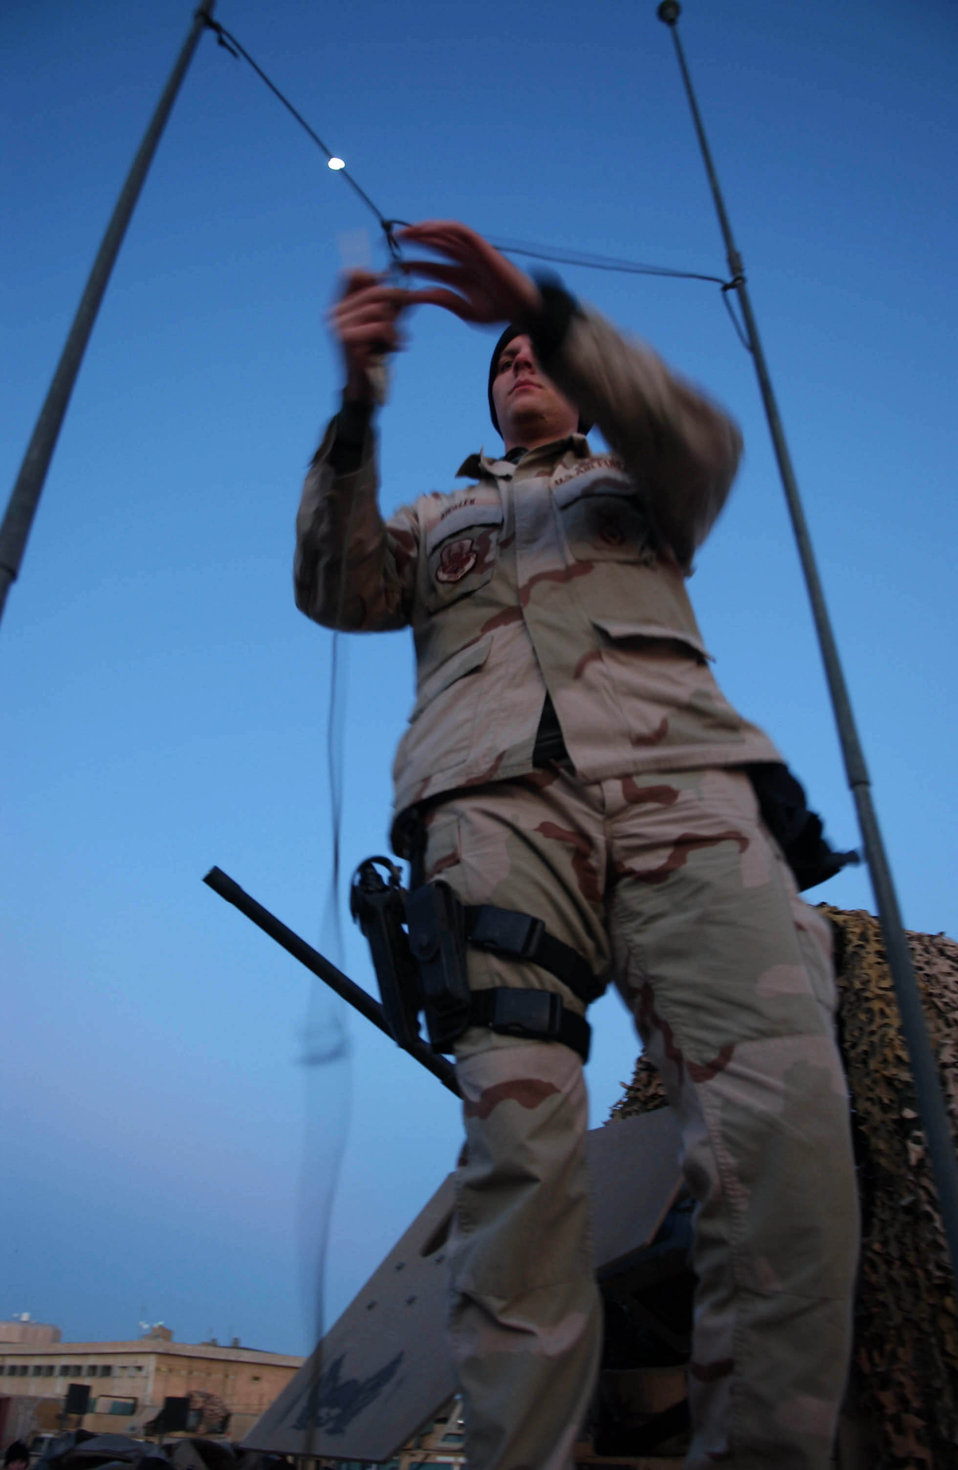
Patrolling Baghdad

An Airman from Bravo Flight, Detachment 7, 732nd Expeditionary Security Forces Squadron adjusts the antenna of a high mobility, multi-wheeled vehicle prior to a mounted patrol in Baghdad, Iraq, Nov. 10, 2006. The security forces squadron's mission is to deploy into Baghdad's city streets to assist Iraqi police in achieving self-sufficiency and enabling orderly control of their battle space.